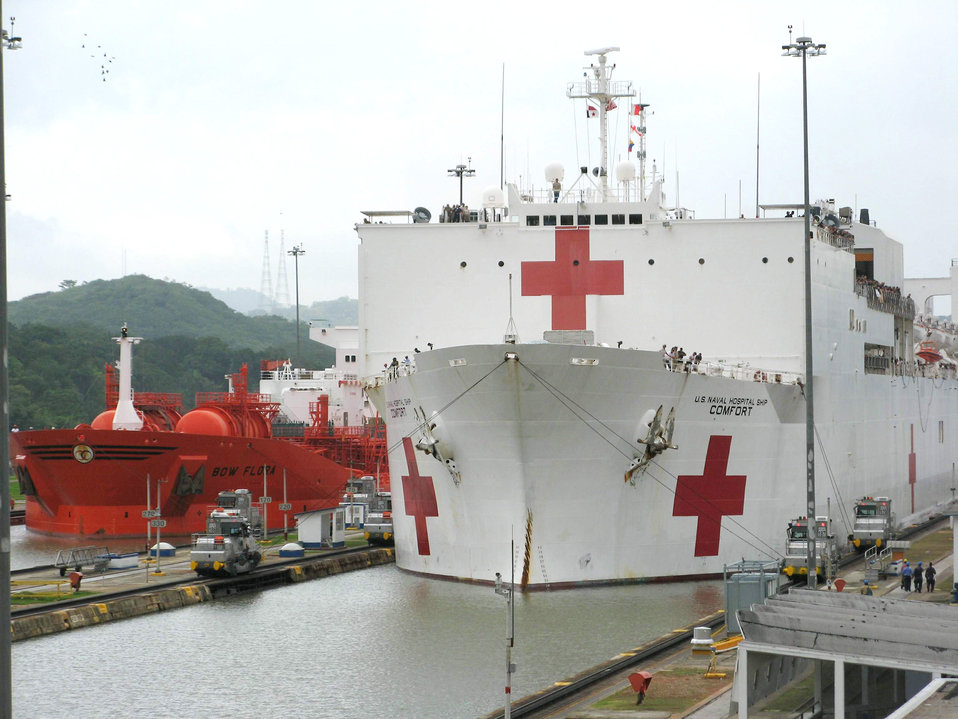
Continuing Promise 2009

The hospital ship USNS Comfort transits the Panama Canal at the Miraflores locks. Service members on the ship are a part of Continuing Promise 2009, a four-month humanitarian and civic assistance mission to Latin America and the Caribbean region. Continuing Promise 2009 combines U.S. military and interagency personnel, non-governmental organizations, civil service mariners, academics and partner nations to provide medical, dental, veterinary and engineering services afloat and ashore alongside host nation personnel.